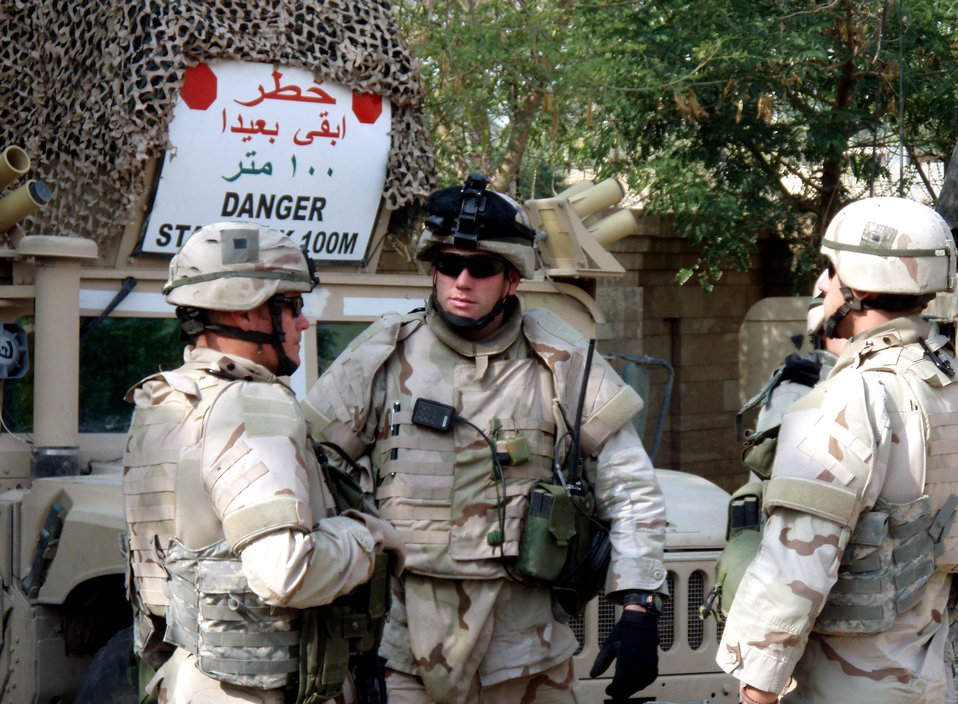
Moody unit supports battlefield Airmen

Tech. Sgt. William Duffy, Staff Sgt. Justin Geers and Staff Sgt. James Arent discuss a patrol in Iraq. The sergeants were assigned to the 824th Security Forces Squadron at Moody Air Force Base, Ga. The 824th SFS was the first Air Force security forces unit tasked to train Iraqi police in downtown Baghdad. The squadron, part of the specialized force protection capabilities of the 820th Security Forces Group, will be realigned under the new 93rd Air Ground Operations Wing, when that unit activates in January at Moody AFB.